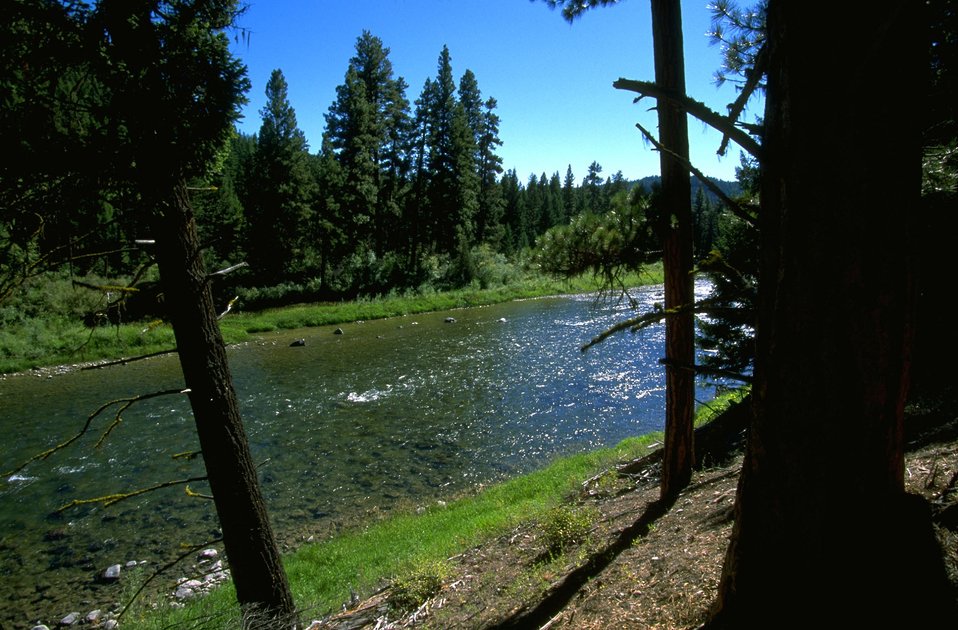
Scenic shot of Blackfoot River